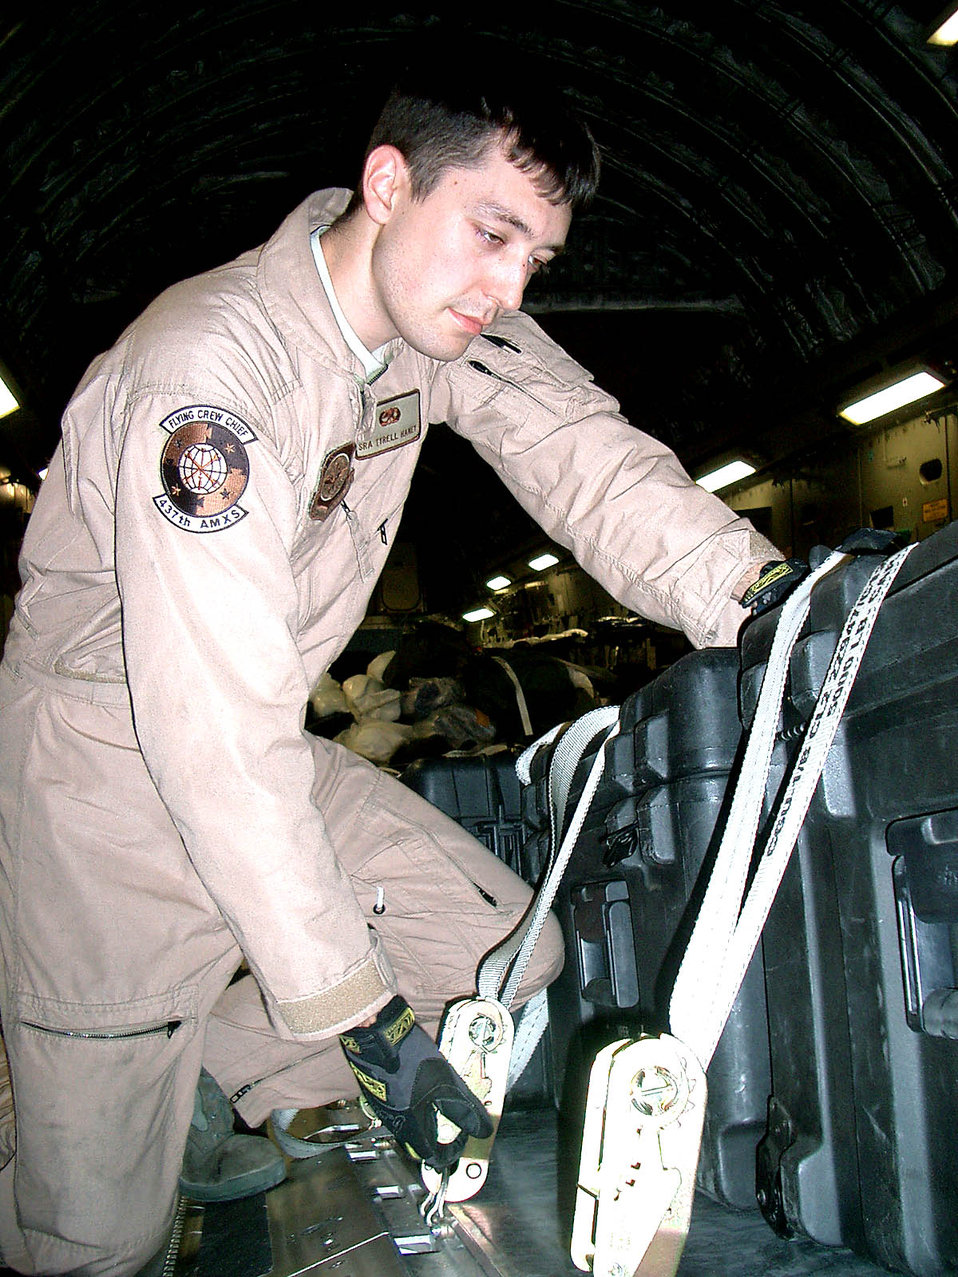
Chief of staff reenlists maintainer over Southwest Asia

Senior Airman Tyrell Haney, a 437th Aircraft Maintenance Squadron crew chief from Charleston Air Force Base, S.C. secures a pallet Oct. 23 aboard a C-17 Globemaster III transporting Air Force Chief of Staff Gen. Norton A. Schwartz and Chief Master Sgt. of the Air Force Rodney J. McKinley. The Air Force leaders were on a visit to various locations in the U.S. Central Command area of operations, including bases in Iraq, Afghanistan and the Horn of Africa. Airman Haney reenlisted in a ceremony during the flight.